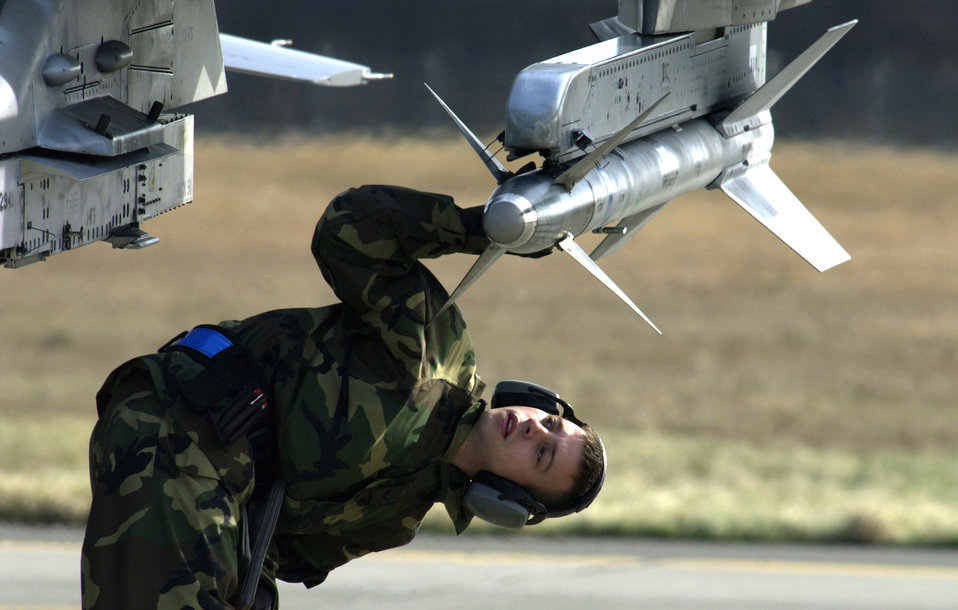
Looks good from here

MISAWA AIR BASE, Japan -- Senior Airman David Rogers conducts an end-of-runway inspection on an F-16 Fighting Falcon during exercise Keen Sword 2005 here recently. Airman Rogers is a weapons load crew member assigned to the 13th Aircraft Maintenance Unit.